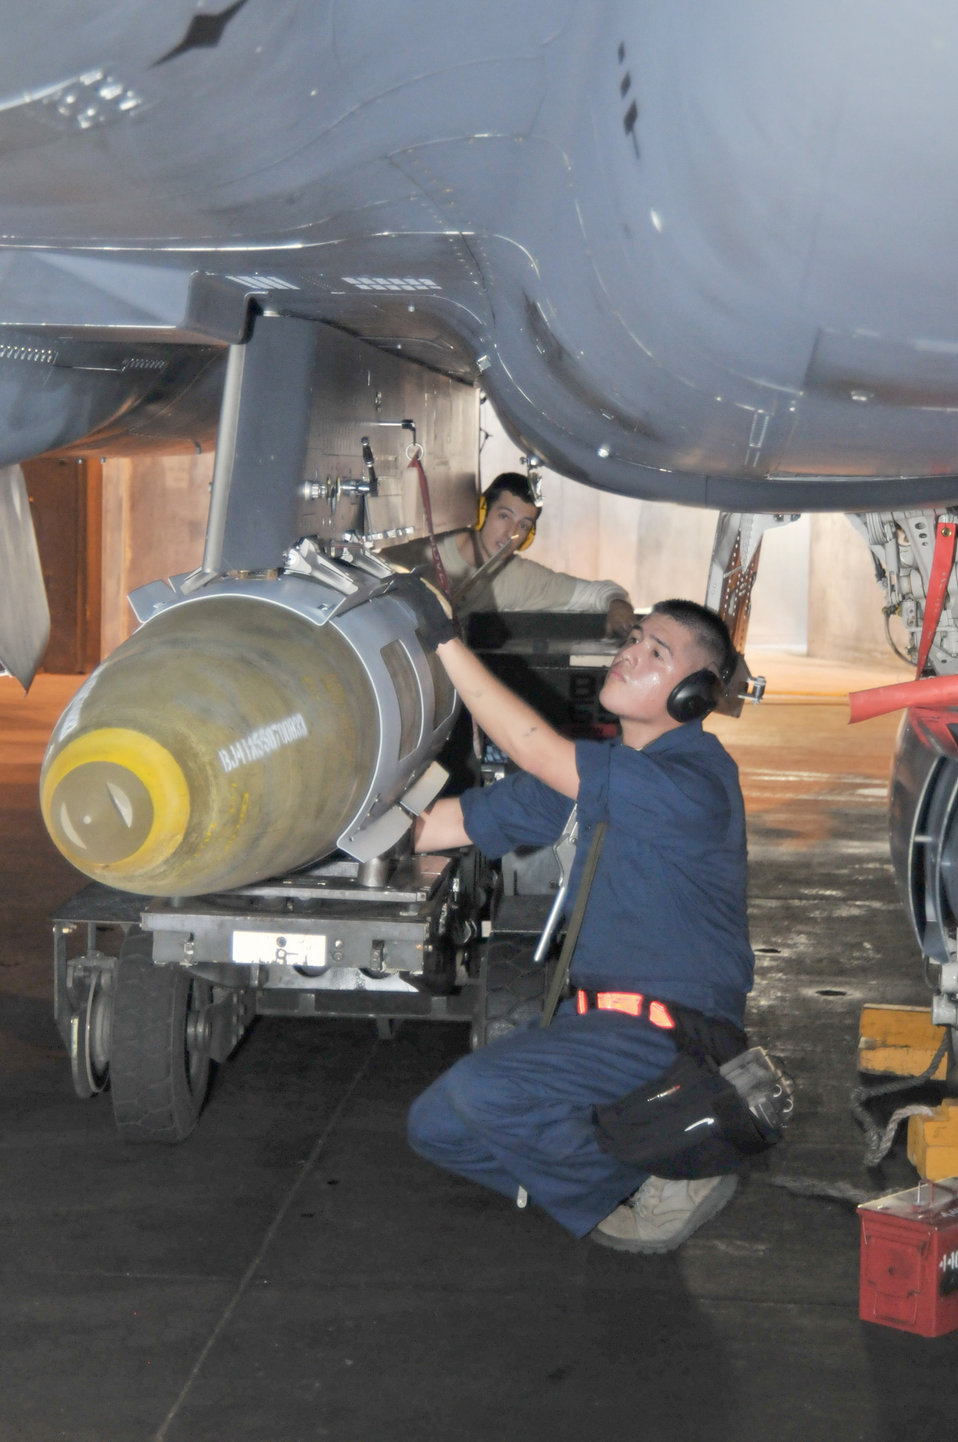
Lakenheath set-piece demonstration

Tech. Sgt. Salvador Bravo (foreground) and Senior Airman Alex Ponzi load a GBU-31 onto an F-15E Strike Eagle Oct. 7, 2010, at Royal Air Force Lakenheath, England. Set-piece demonstrations involve five-man teams tasked with regenerating an aircraft within a specified time limit in preparation for the NATO Tactical Evaluation. Sergeant Bravo and Airman Ponzi are members of the 48th Maintenance Group.